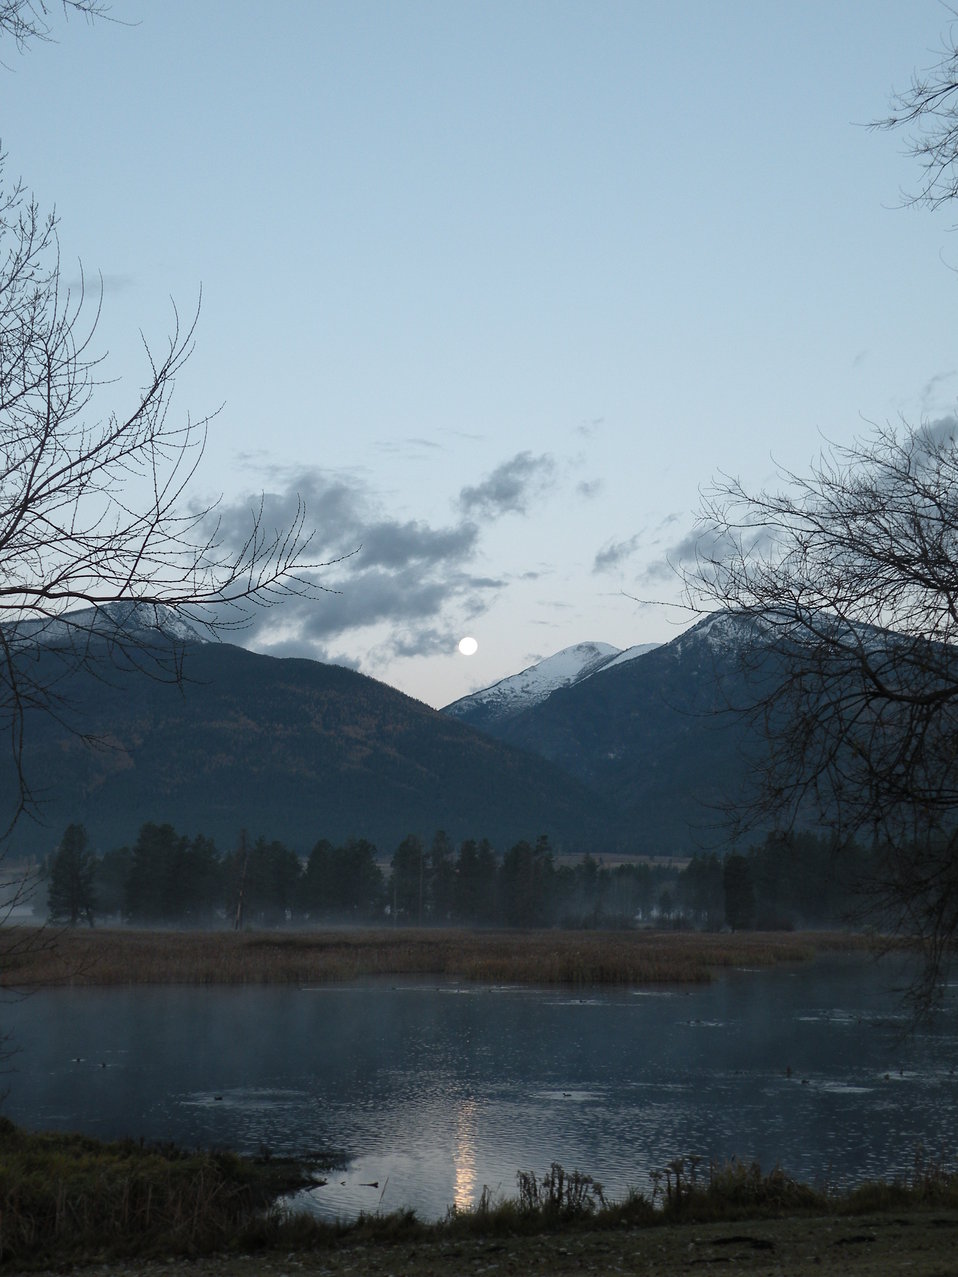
Full Moon over Refuge

View from Refuge Visitor Center on early October morning.